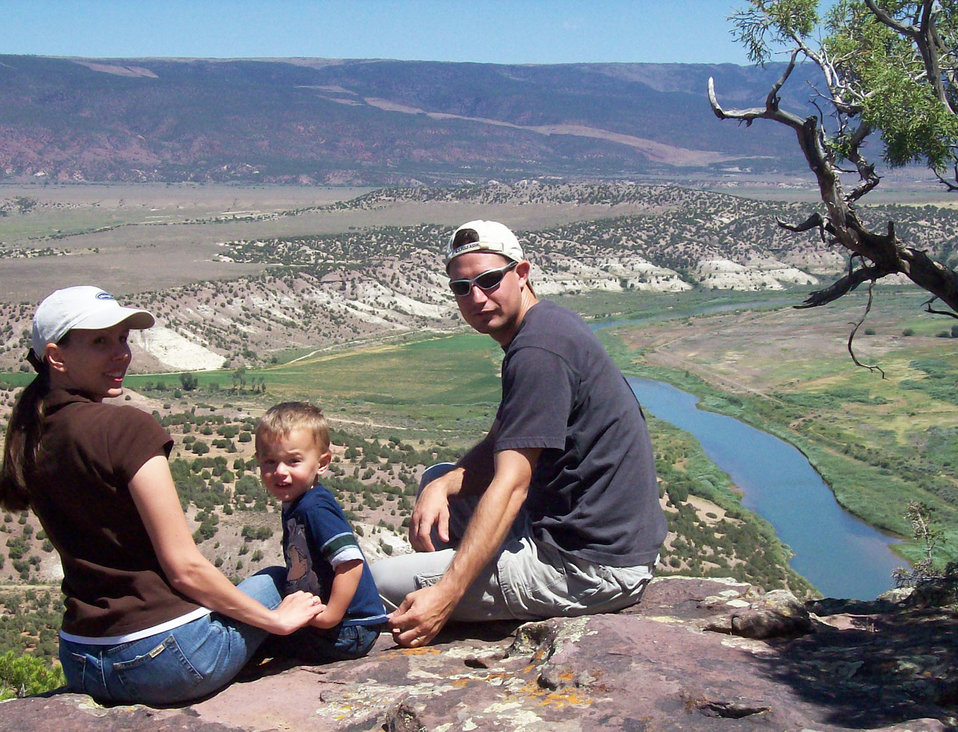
Airman uses training to help man hit by train

Senior Airman Eric Slaugh, his wife, Marcie, and his son, Skyler, enjoy the view of the Green River in Wyoming during a family vacation. Airman Slaugh, assigned to the 27th Special Operations Component Maintenance Squadron at Cannon Air Force Base, N.M., used his self-aid and buddy care training to assist a man hit by a train in December 2008.